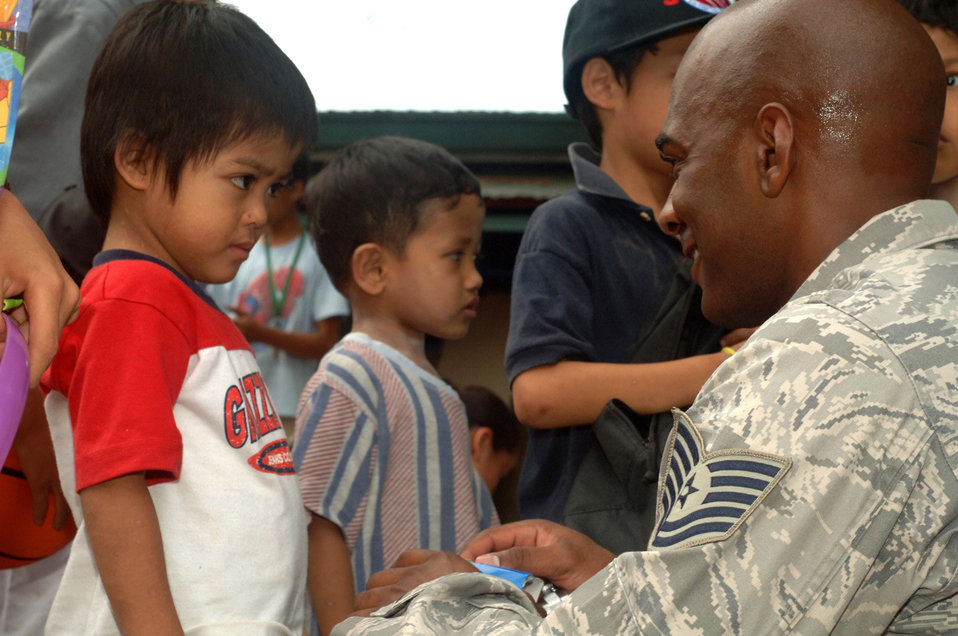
Airmen spread goodwill during Balikatan 2009

Tech. Sgt. Derek Smith and more than 20 other Airmen hand out donated school supplies, athletic equipment and toys to Filipino children from the Duyan Ni Maria orphanage as part of a volunteer community relations event April 25 at Angeles City, Philippines. Sergeant Smith is assigned to the 56th Logistics Squadron from Luke Air Force Base, Ariz.